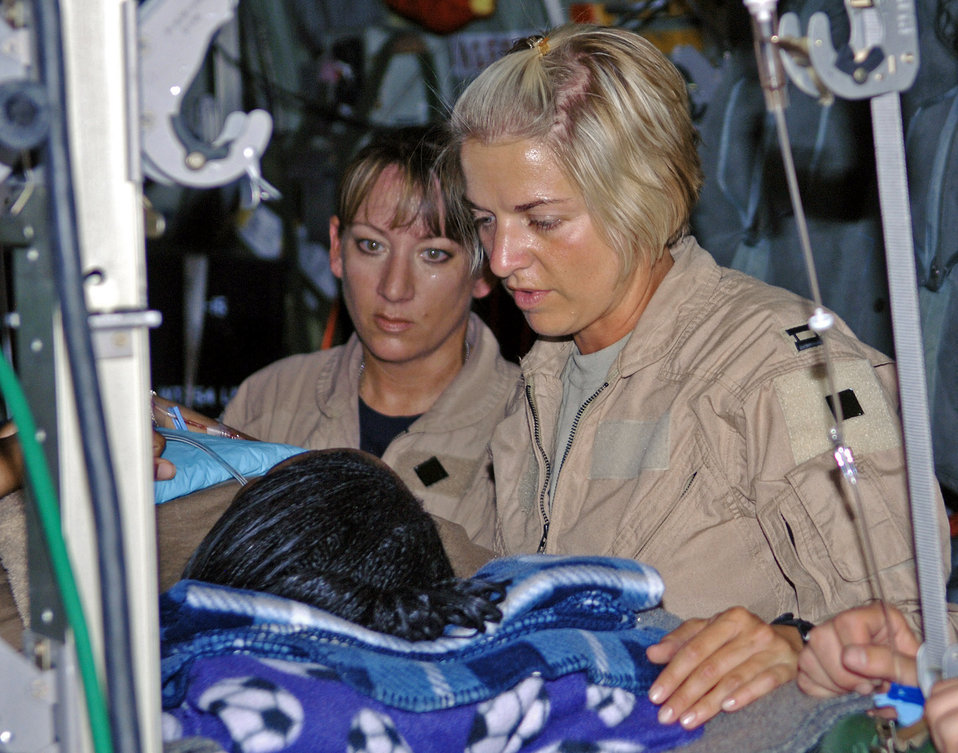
New Air Guard medical mission

Master Sgt. Theresa Sheheen (left) and Capt. Michelle Mulberry tend to a litter patient on an aeromedical evacuation mission, from Bagram Air Base, Afghanistan. Sergeant Sheheen is a 455th Expeditionary Aeromedical Evacuation Flight medical technician and Captain Mulberry is a 455th EAEF flight nurse.